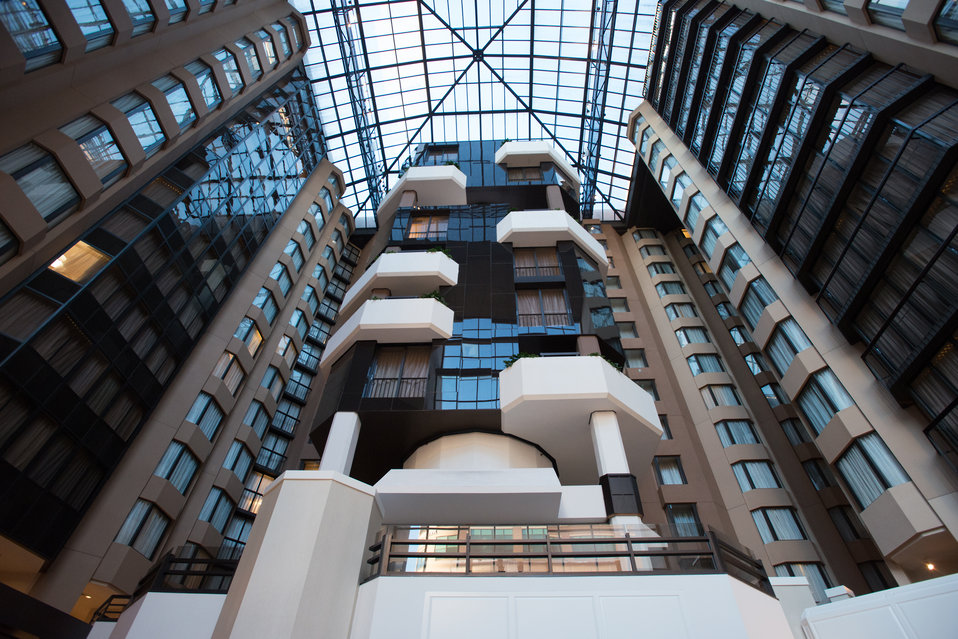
The 2014 NCAI Executive Council Winter Session is at the Westin Washington City Center in Washington, D.C. on Thursday, Mar. 13, 2014.